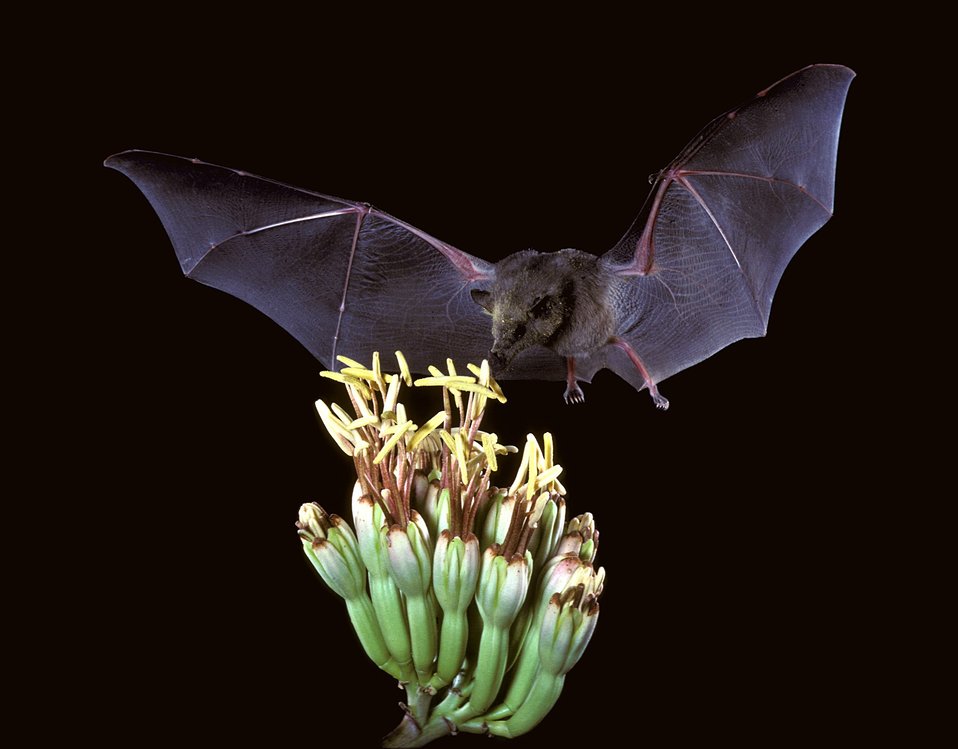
Choeronycteris mexicana, Mexican long-tongued bat